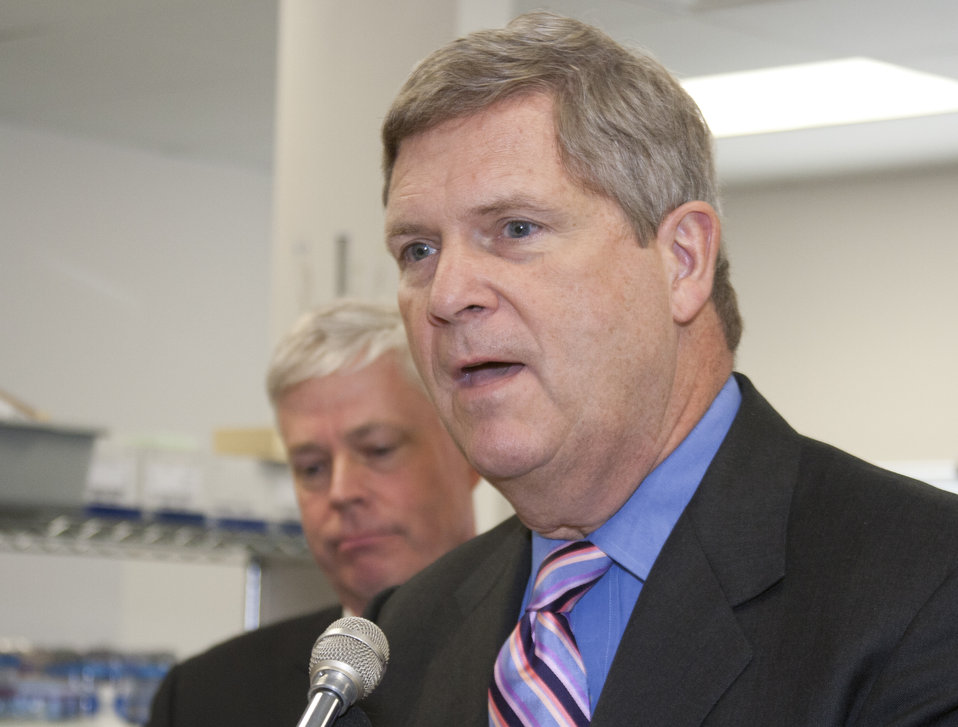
Agriculture Secretary Tom Vilsack spoke to employees at Agrivida Inc., in Medford, MA, on Friday, May13, 2011. Agivida Inc. is a local company involved in developing new technologies to produce the next generation of biofuels, which will support economic development in rural America. Agrivida Inc. is developing methods to reduce the cost of converting biofuel feedstocks into sugar, focusing on sorghum, corn stover, and switchgrass. 'Working with private industry and our government partners, we are developing new energy sources from renewable, homegrown next-generation feedstocks. By developing and commercializing advanced biofuels, we will create jobs, provide consumers with new options to fuel their vehicles, and reduce our dependence on foreign oil,' said Vilsack.